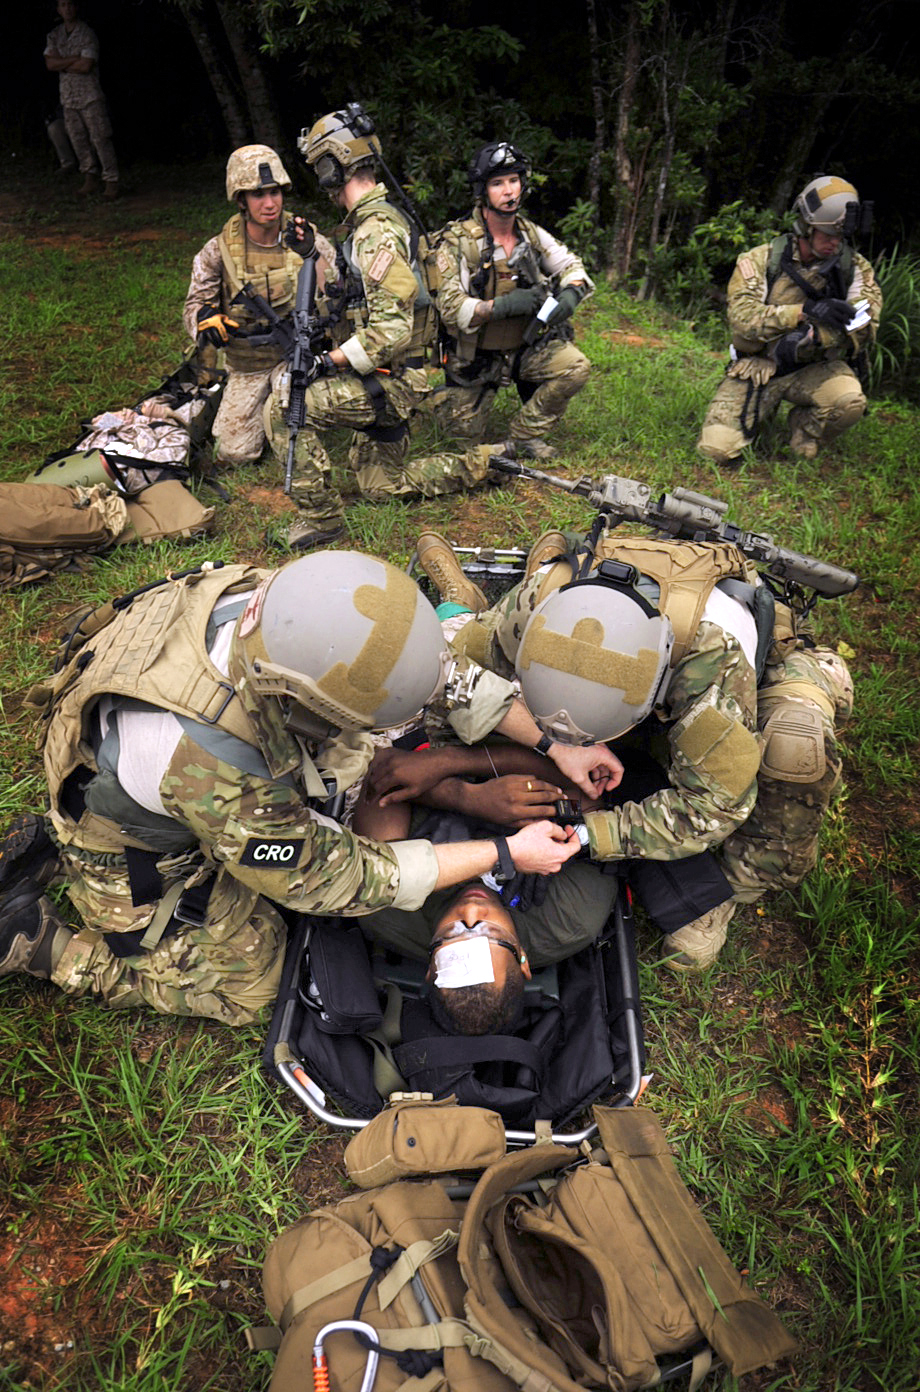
Airmen learn essential skills during joint combat training exercise

Airmen from the 31st Rescue Squadron tend to the medical needs of a simulated attack victim during a joint training exercise July 28, 2010, at Kadena Air Base, Japan. Airmen and Marines worked together to broaden their ability to treat and transport injured servicemembers safely out of the battlefield.